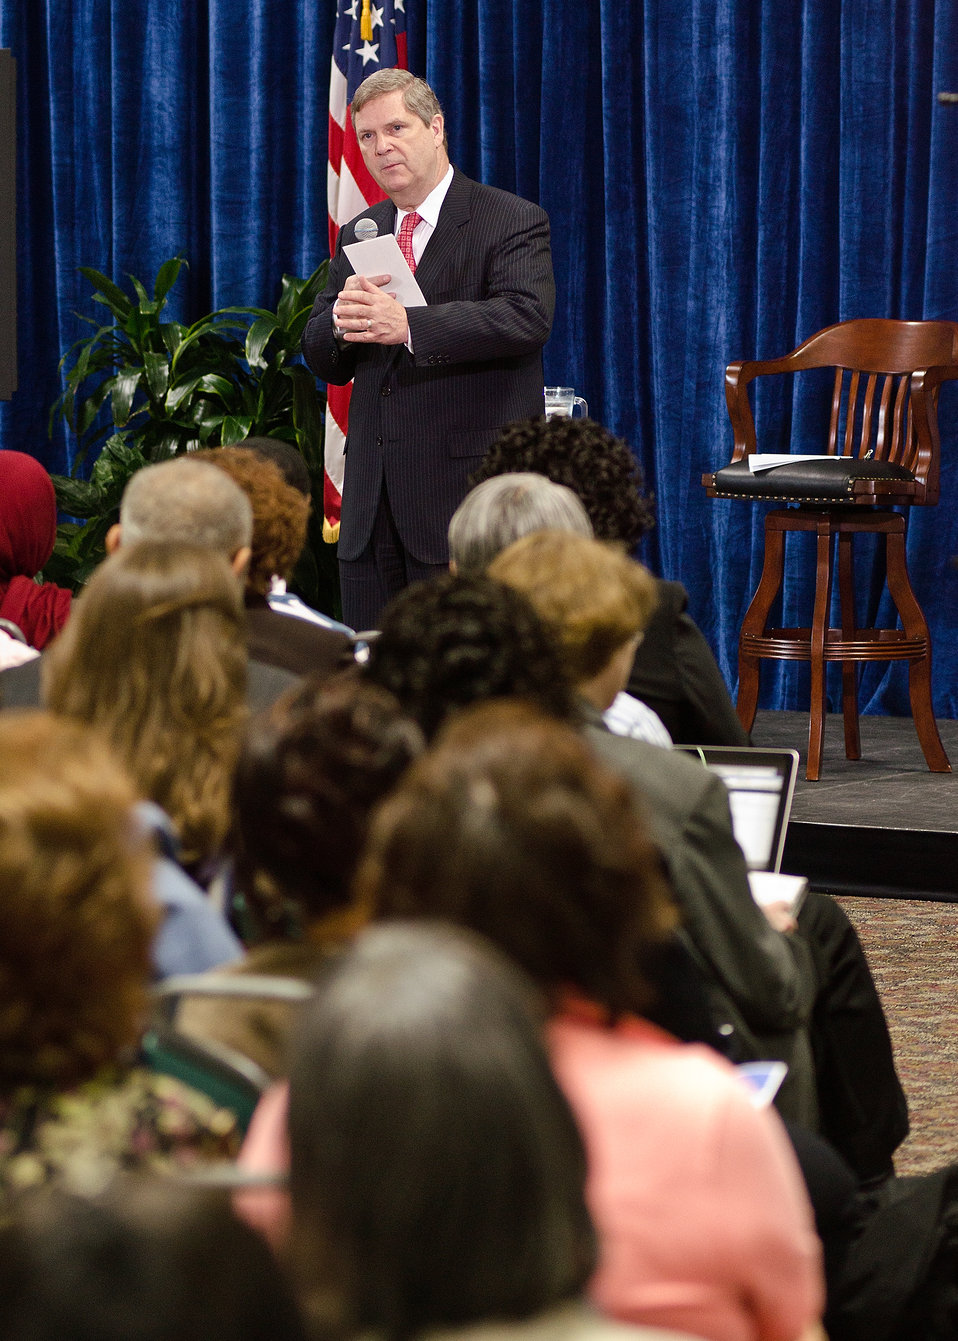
Agriculture Secretary Tom Vilsack offered U. S. Department of Agriculture (USDA) employees the opportunity to ask questions about the Blueprint for Stronger Service Initiative and hear directly from the Secretary Vilsack during the Ask The Secretary event held in the South Building Cafeteria, in Washington, D.C., on Wednesday, March 21, 2012, The Blueprint for Stronger Service Initiative aims to build a modern and efficient service organization that is closely timed with technological innovations - and better suited to respond to 21st century agricultural challenges.